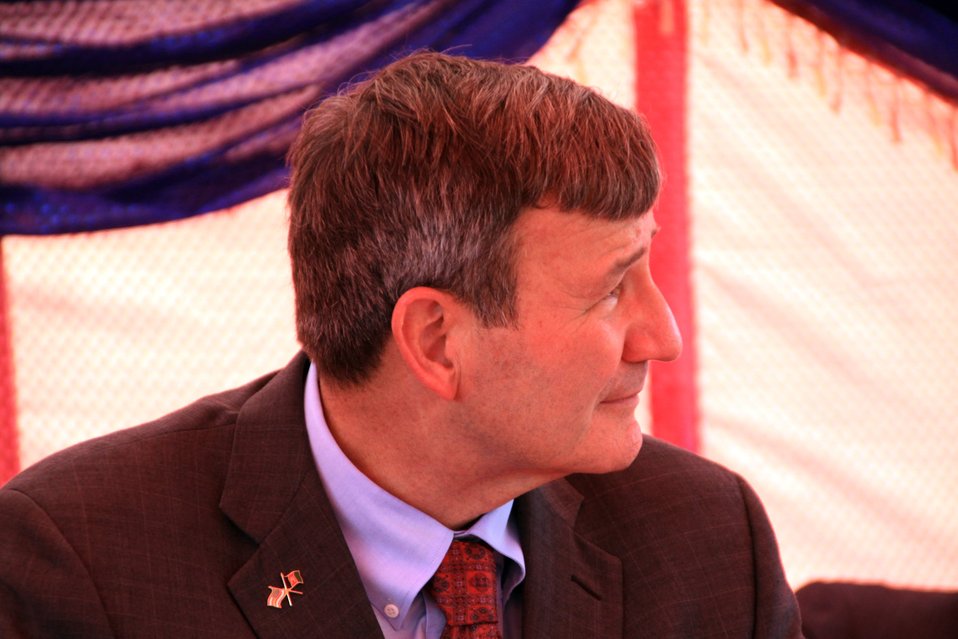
Badam Bagh Farm